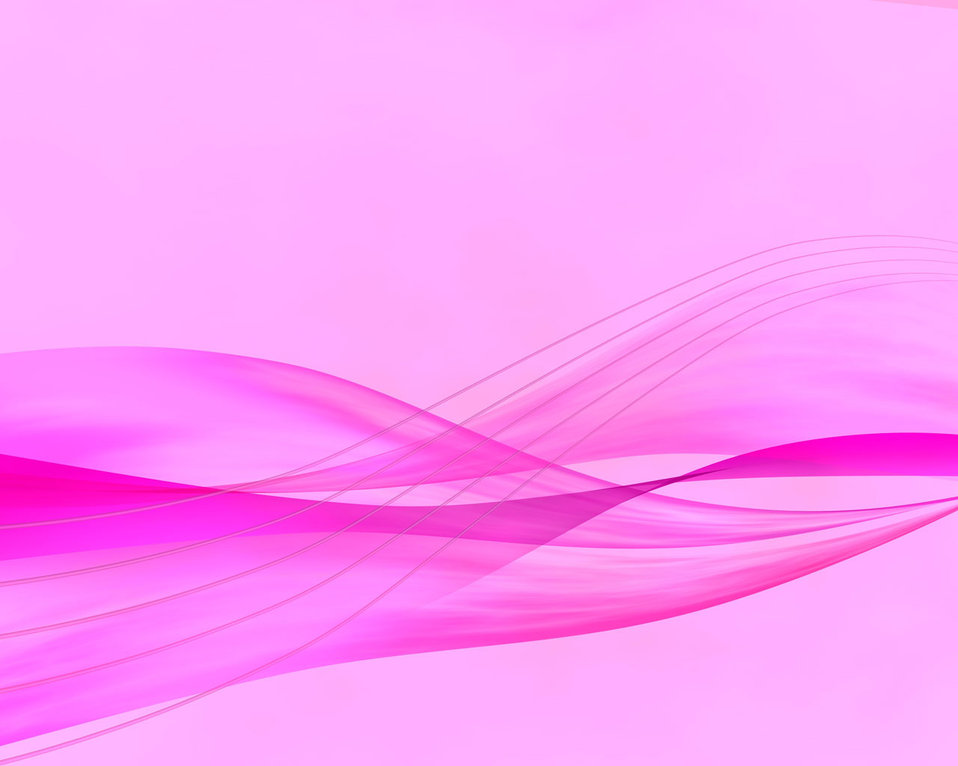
Abstract background.